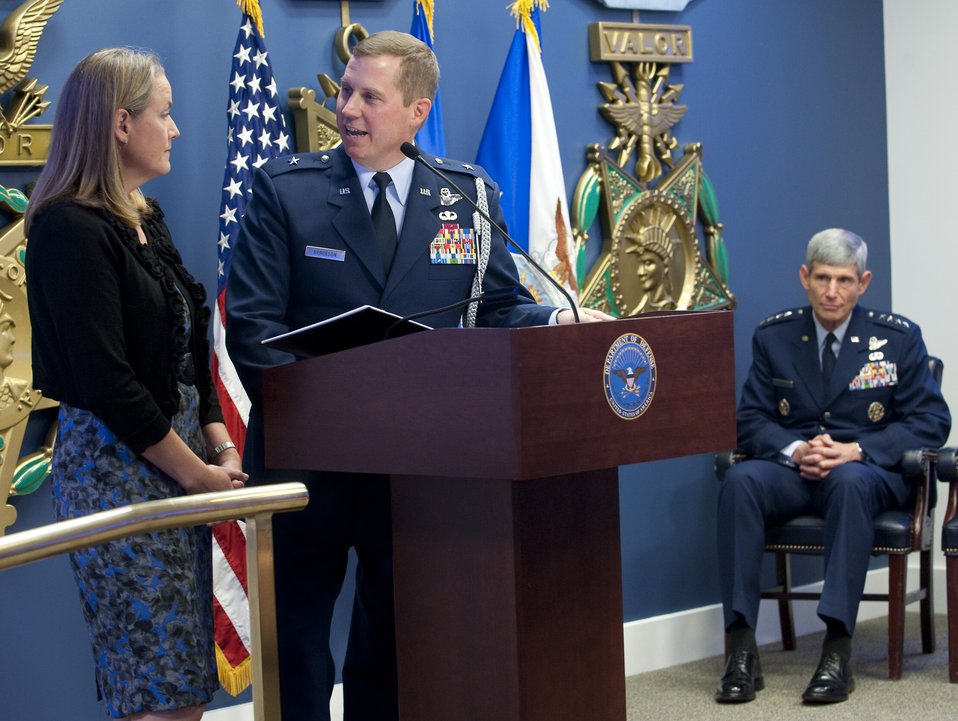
O'Malley Award

Air Force Chief of Staff Gen. Norton Schwartz (seated right) looks on as Brig. Gen. Thomas W. Bergeson and his wife Pamela talk about winning the 2010 General and Mrs. Jerome F. O'Malley award. General Schwartz presented the award during a ceremony in the Pentagon Oct. 4, 2010. The award is presented annually to the wing commander and spouse team who have best exhibited their own courage, power, grace and beauty in caring for Air Force families. The award was established after the O'Malleys, who were known for their leadership and contributions to Air Force families and communities, were tragically killed in a plane crash in 1985.